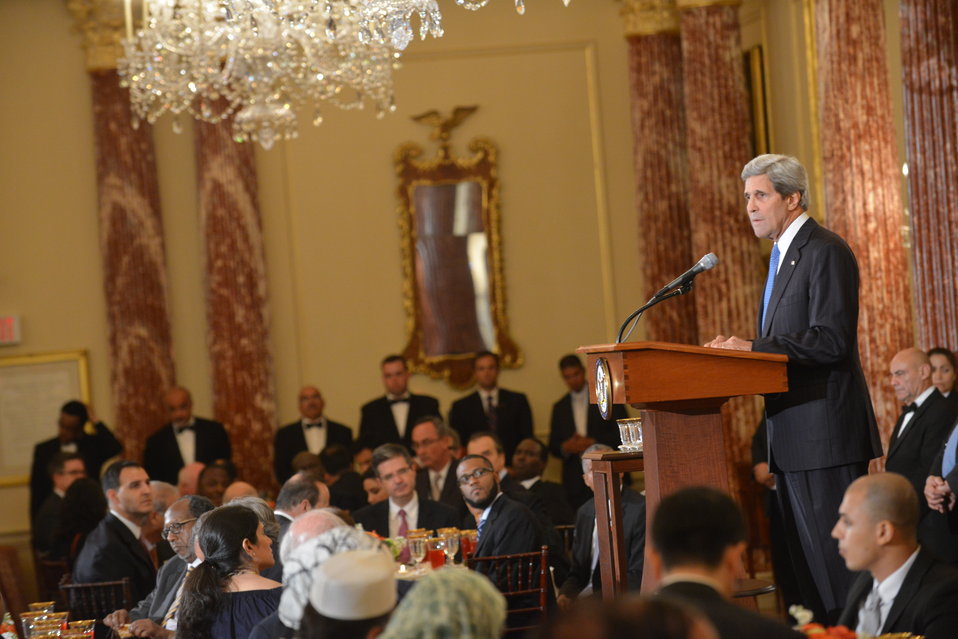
Secretary Kerry Hosts an Iftar

U.S. Secretary of State John Kerry hosts an Iftar to commemorate the month of Ramadan at the U.S. Department of State in Washington, D.C., on July 24, 2013.